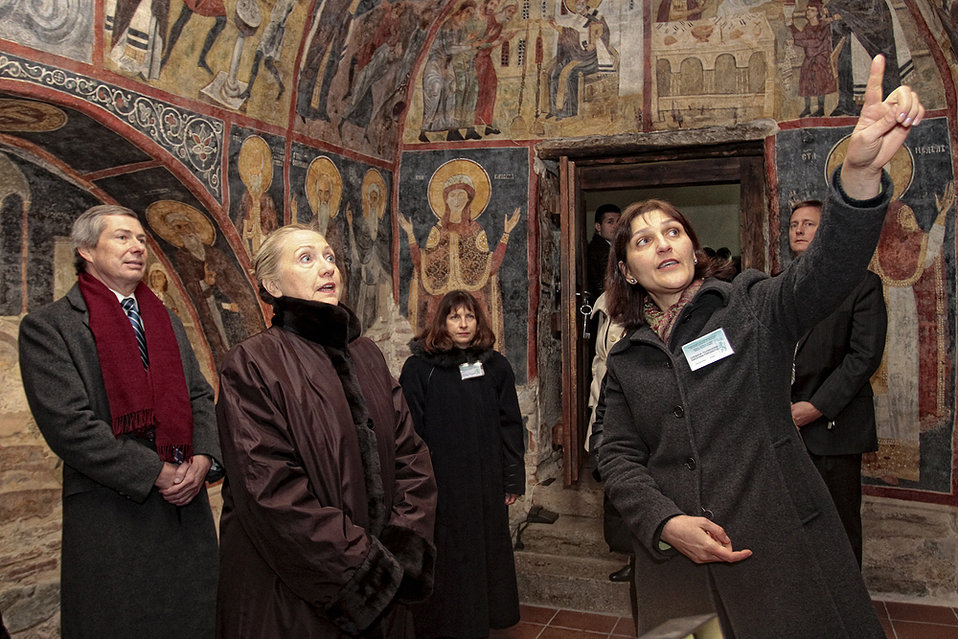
Secretary Clinton Tours the Boyana Church

U.S. Secretary of State Hillary Rodham Clinton, with U.S. Ambassador to Bulgaria James Warlick, left; tour the Boyana Church in Sofia, Bulgaria, on February 5, 2012.